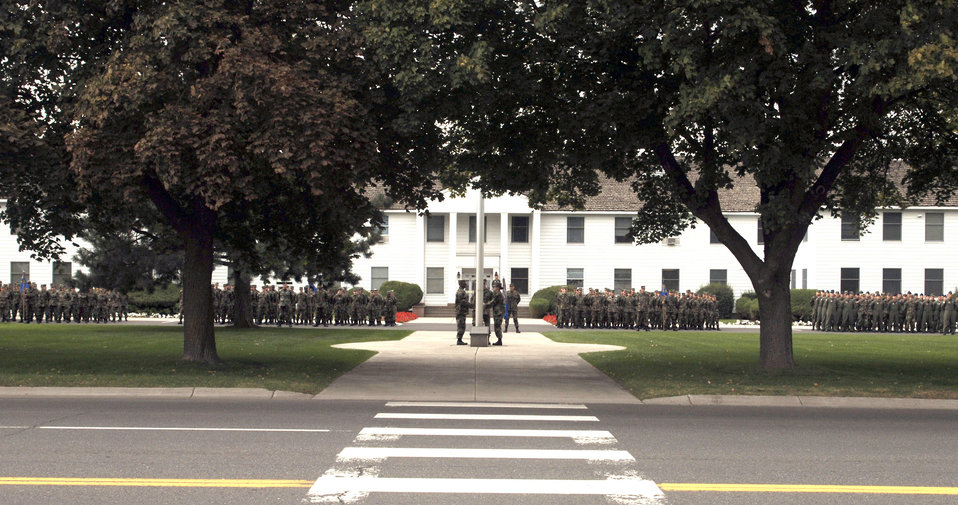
Fairchild celebrates Air Force's 60th

Airmen stand at ease while they await the playing of